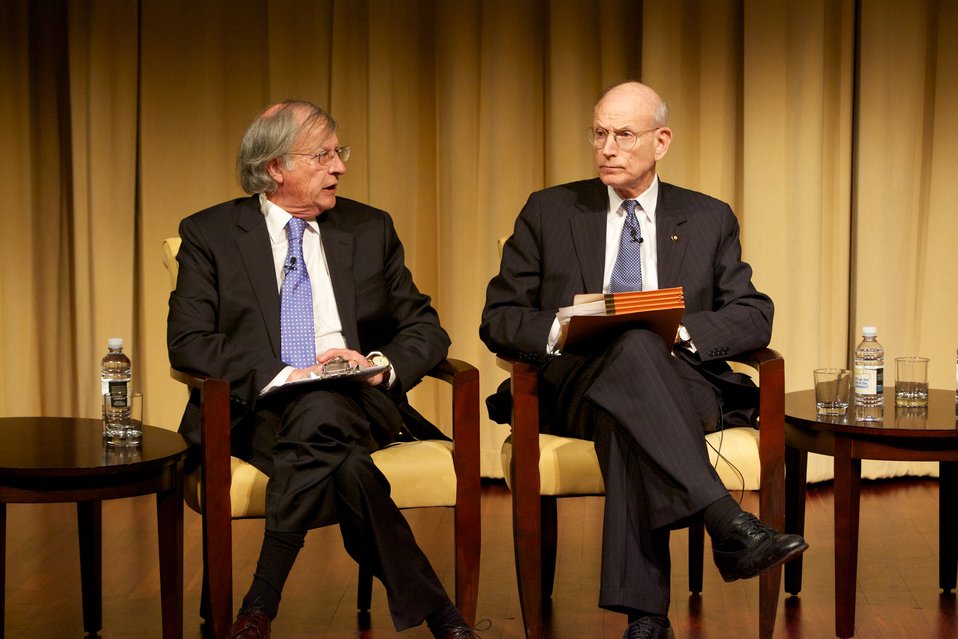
The Monuments Men; Greg Bradsher (left), archivist, moderates the discussion of Nazi looting and the Monuments, Fine Arts, and Archives section with Stuart E. Eizenstat (right), former Special Representative of the President and Secretary of State on Holocaust-Era Issues